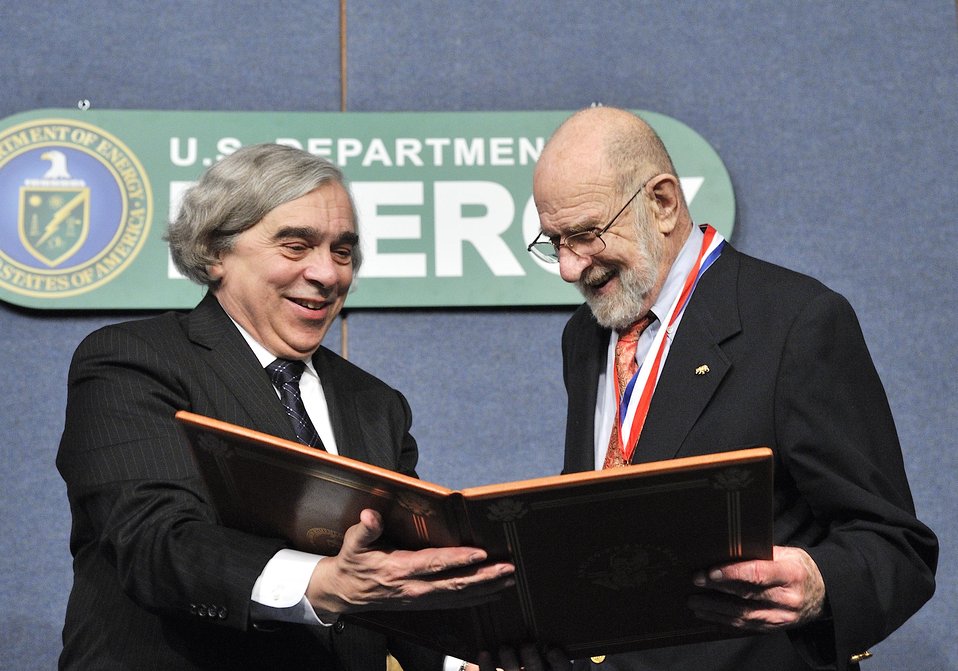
SECRETARY E. MONIZ PRESENTS ANDREW SESSLER WITH THE ENRICO FERMI AWARD ON FEBRUARY 3, 2014 AT THE U.S. DEPARTMENT OF ENERGY